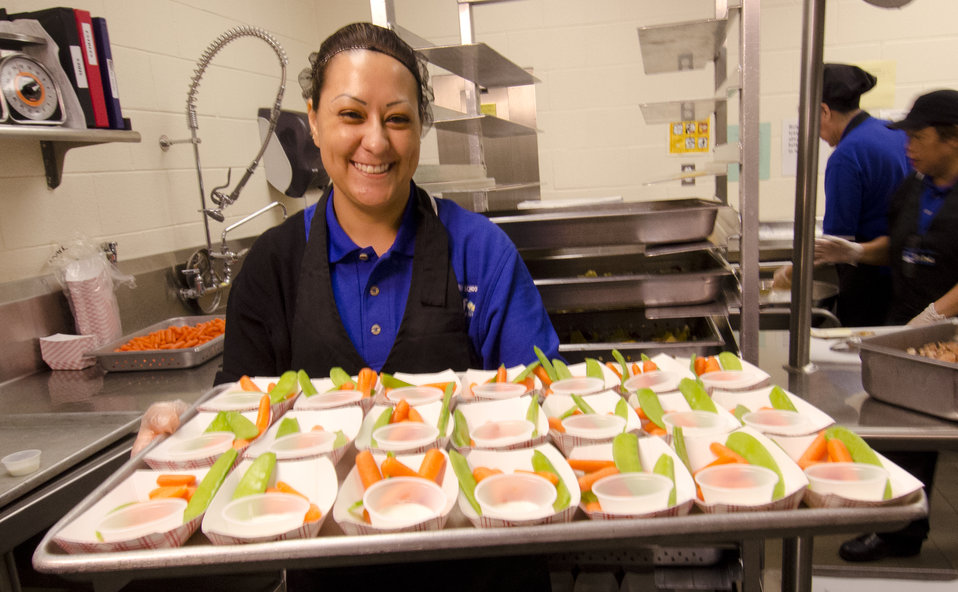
School lunch staff and students enjoy the new school lunch menu created to meet the new standards at the Yorkshire Elementary School in Manassas, VA on Friday, Sept. 7, 2012.